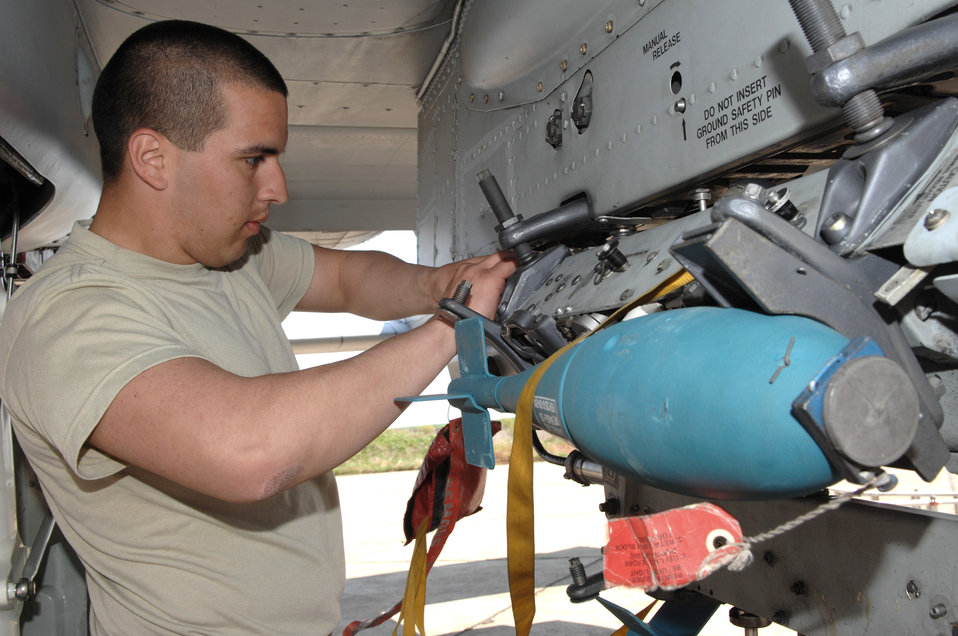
Airmen turn empty Bulgarian hangar into A-10 hub

Airman John Medina secures a practice bomb onto an A-10 Thunderbolt II prior to a training mission April 16 at Bezmer Air Base, Bulgaria. A maintenance squadron team deployed to Bezmer AB to support Exercise Reunion April 2009. Airman Medina is a 52nd Aircraft Maintenance Squadron weapons load crewmember.